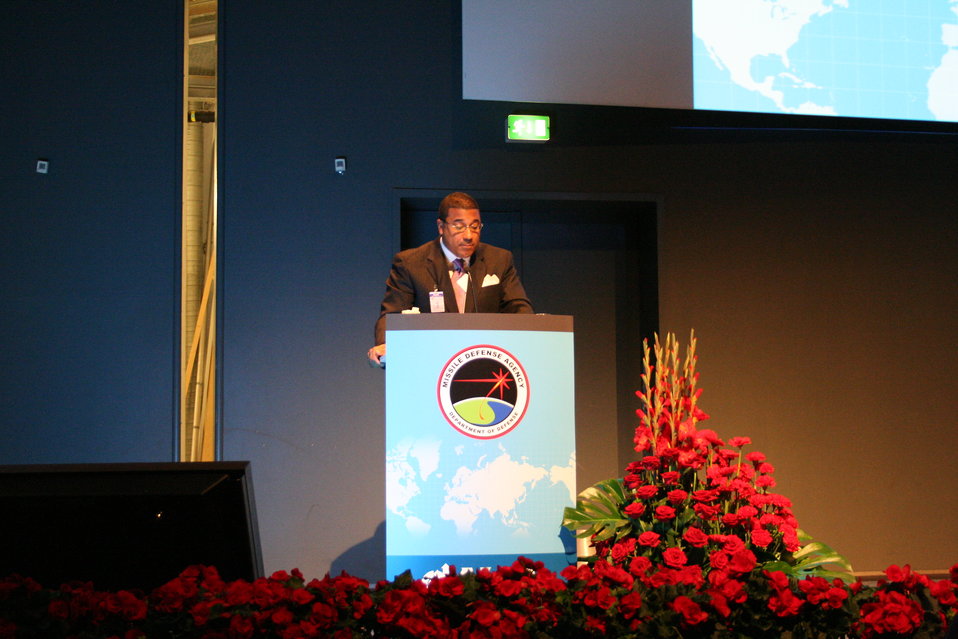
Deputy Assistant Secretary Rose Delivers Remarks on Strengthening International Missile Defense Cooperation

Deputy Assistant Secretary of State for Arms Control, Verification and Compliance Frank A. Rose delivers the keynote speech on Strengthening International Missile Defense Cooperation at the 2011 Multinational BMD Conference and Exhibition in Copenhagen, Denmark, on September 5, 2011.